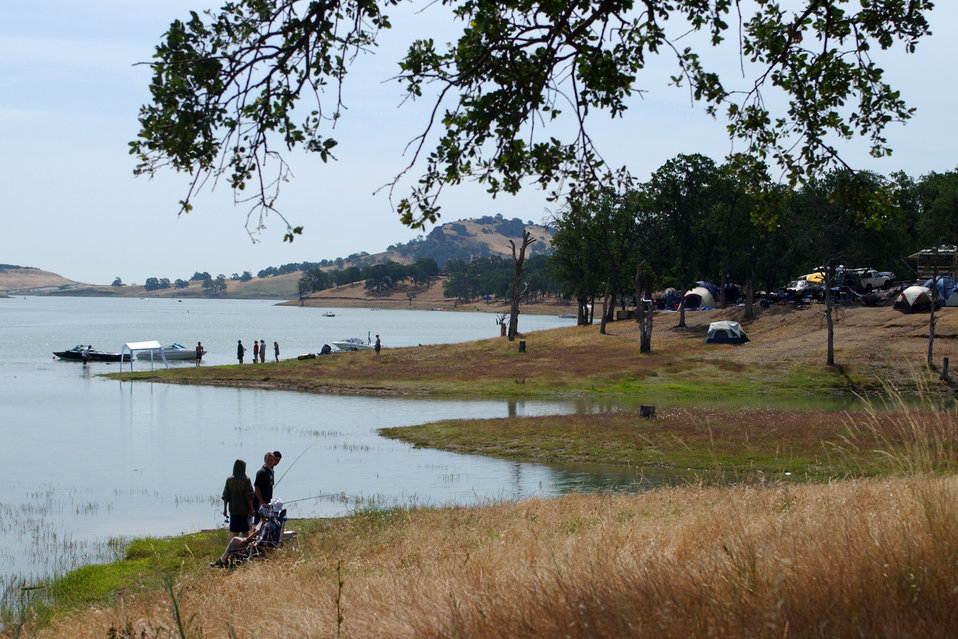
Black Butte Lake

Camping, boating and fishing are some of the recreational opportunities at Black Butte Lake near Orland, Calif., shown May 25, 2002. The lake was formed from the impoundment of Stony Creek in 1963, when the U.S. Army Corps of Engineers Sacramento District completed construction of Black Butte Dam. When full, the lake has a surface area of 4,460 acres, is seven miles long and boasts a shoreline of 40 miles. The dam reduces flood risk for nearby towns and agricultural lands. Black Butte Lake and Dam are managed by the Sacramento District.